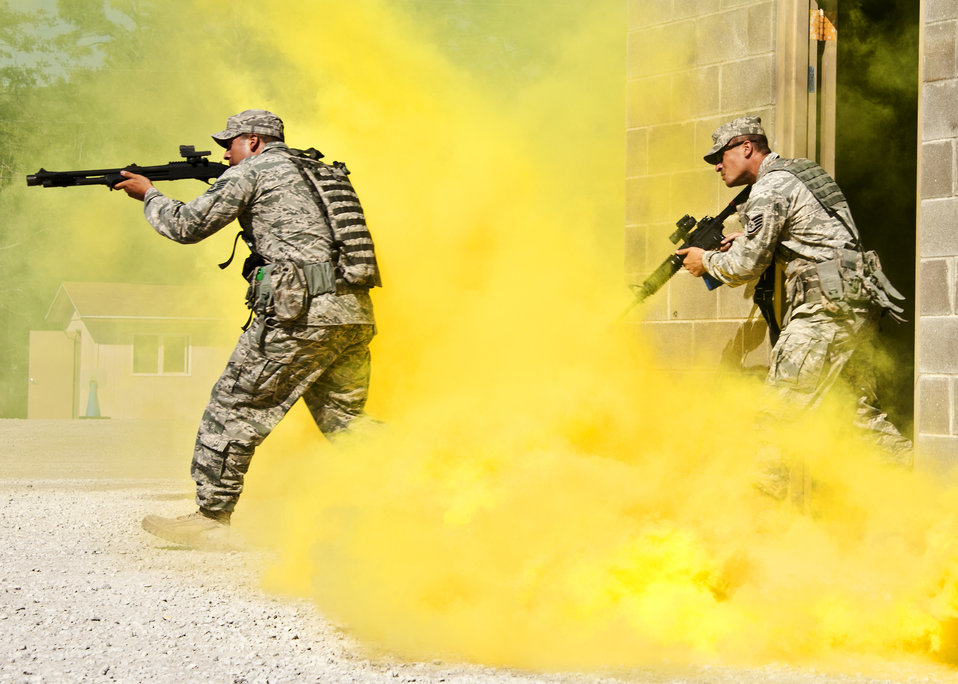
Chief Roy visits 96 GCTS

Staff Sgt. Geovanii Pacheco leads his team out of the building as part of a assault demonstration by the 96th Ground Combat Training Squadron May 6, 2011, at Eglin Air Force Base, Fla. The demonstration was for Chief Master Sgt. of the Air Force James A. Roy during his tour of the squadron facilities. The chief received a hands-on